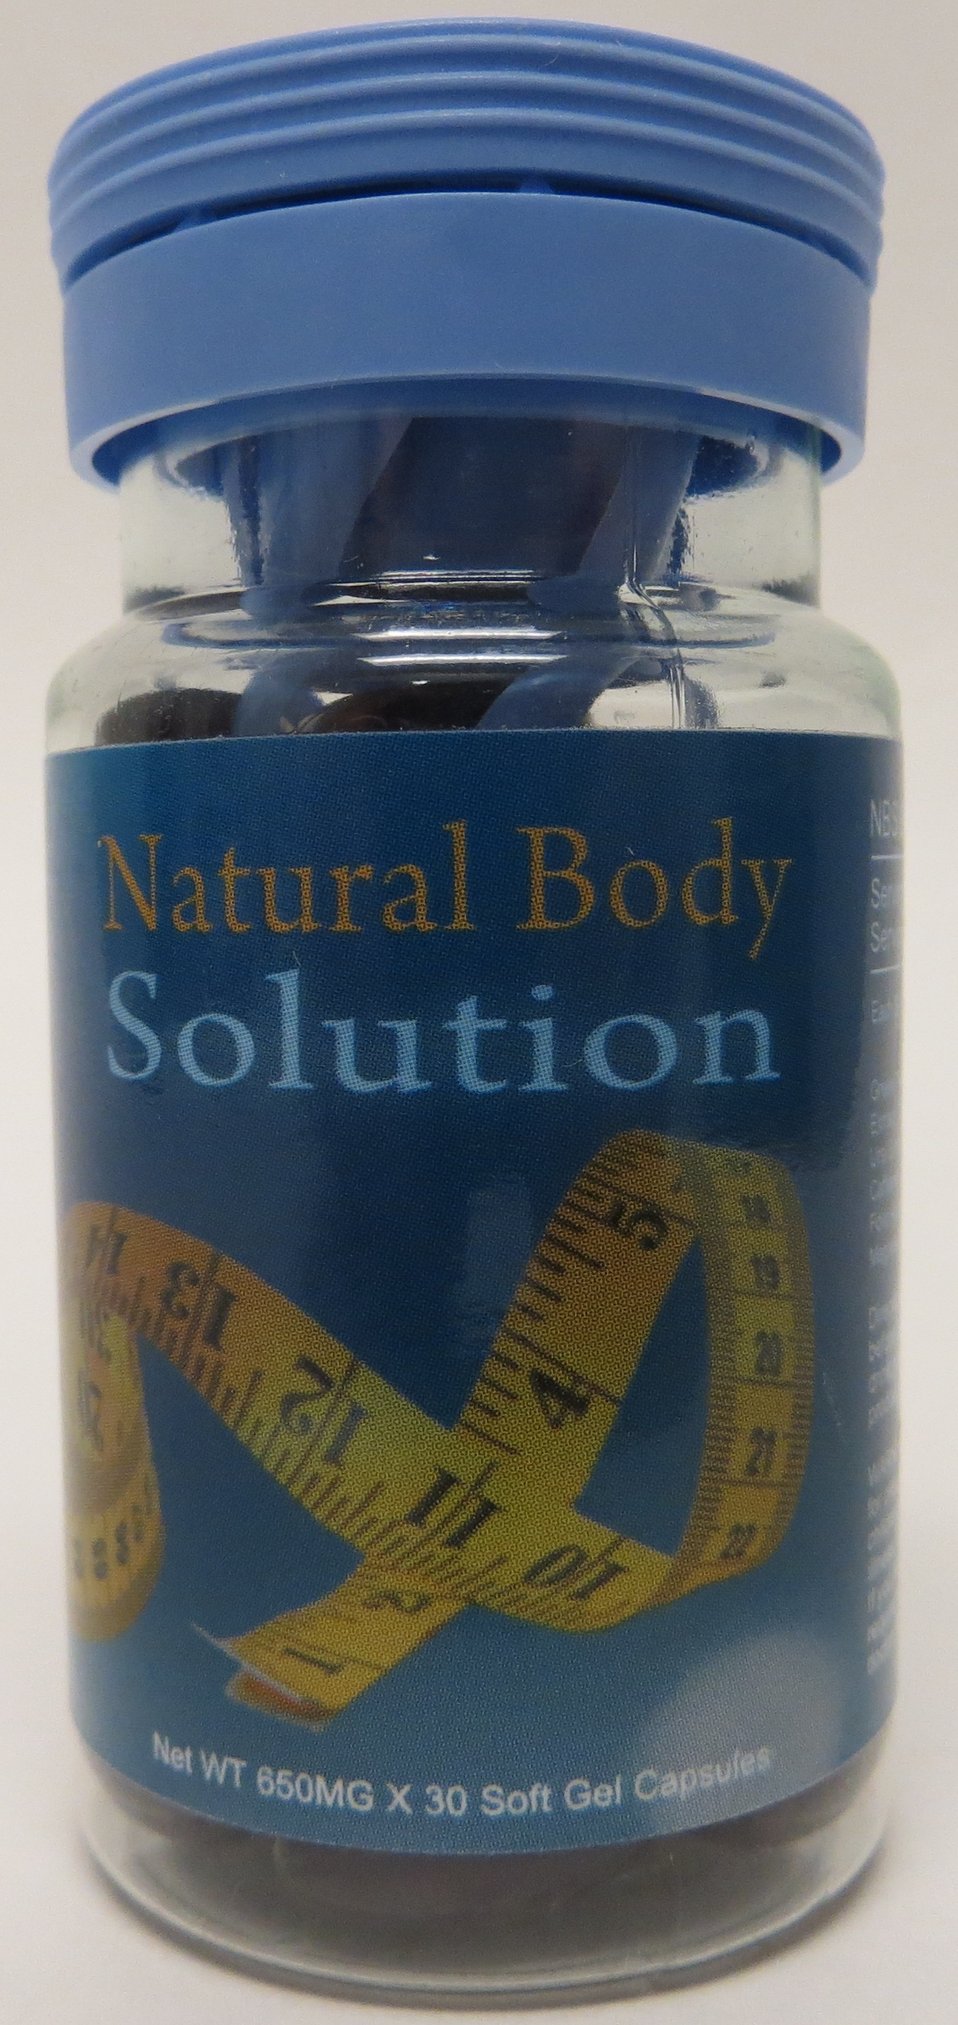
Natural Body Solution

May 5, 2014 - The FDA is advising consumers not to purchase or use Natural Body Solution, a product promoted and sold for weight loss. The product was found to contain undeclared sibutramine. For more information, go to www.fda.gov/Drugs/ResourcesForYou/Consumers/BuyingUsingMe...

And read this Consumer Update: Beware of Fraudulent ‘Dietary Supplements’